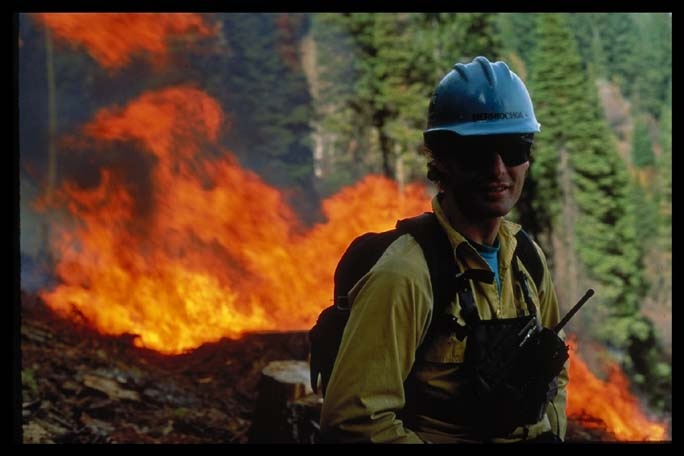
Wildland firefighter